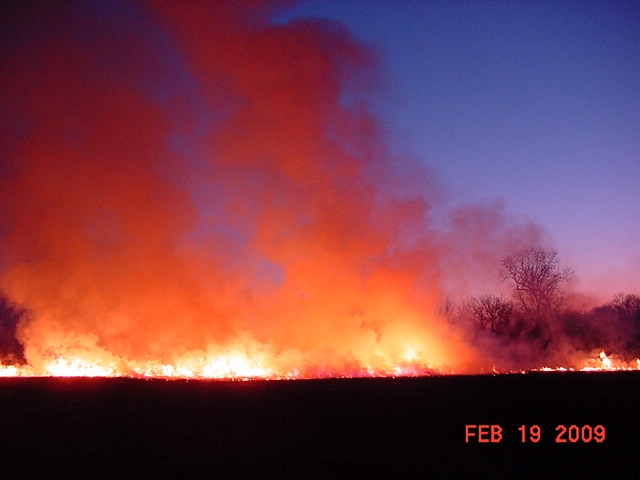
Fire at Sunset